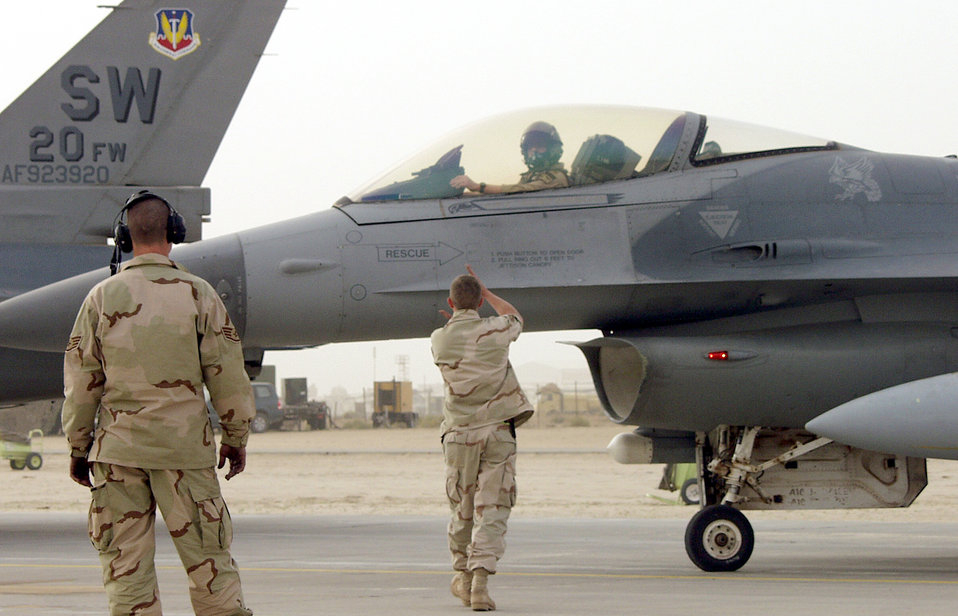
Diversion

OPERATION IRAQI FREEDOM – Tech. Sgt. Clark “Tex” Ritter, signals a repair to the pilot of an F-16 Fighting Falcon diverted to the base due to inclement weather as Staff Sgt. Aaron Wilson, an F-16 electrician flown in to repair the aircraft, looks on.